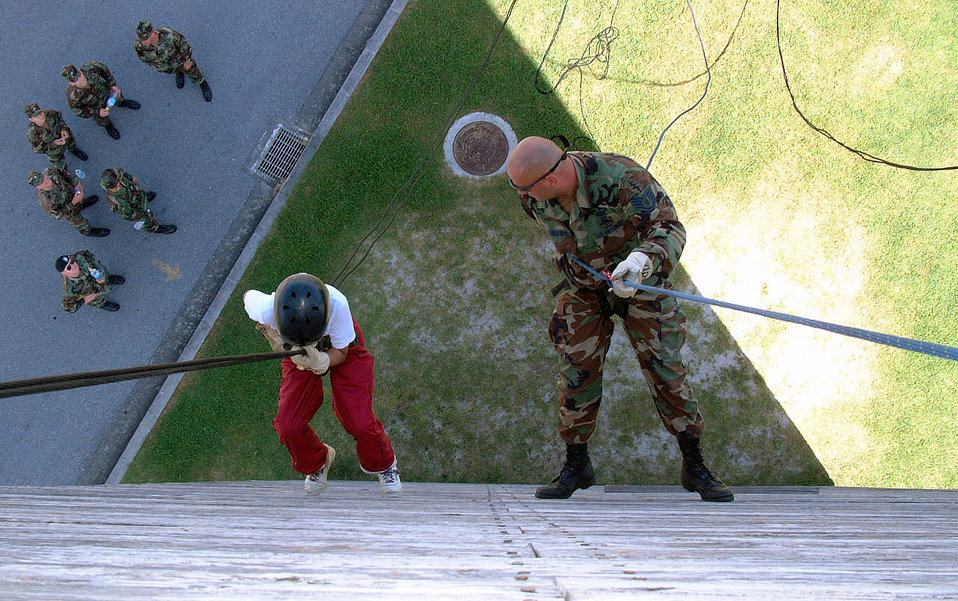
Don't look down

OKINAWA, Japan -- Nine-year-old Rika Chinen, from Okinawa's Girl Scout Troop 457, rappels down a tower while at summer camp. Chinen is helped by Staff Sgt. David Blankenship, a combat controller with the 320th Special Tactics Squadron, Kadena Air Base, Japan. Nearly 100 other Girl Scouts from around the Pacific also participated in the week-long summer camp.